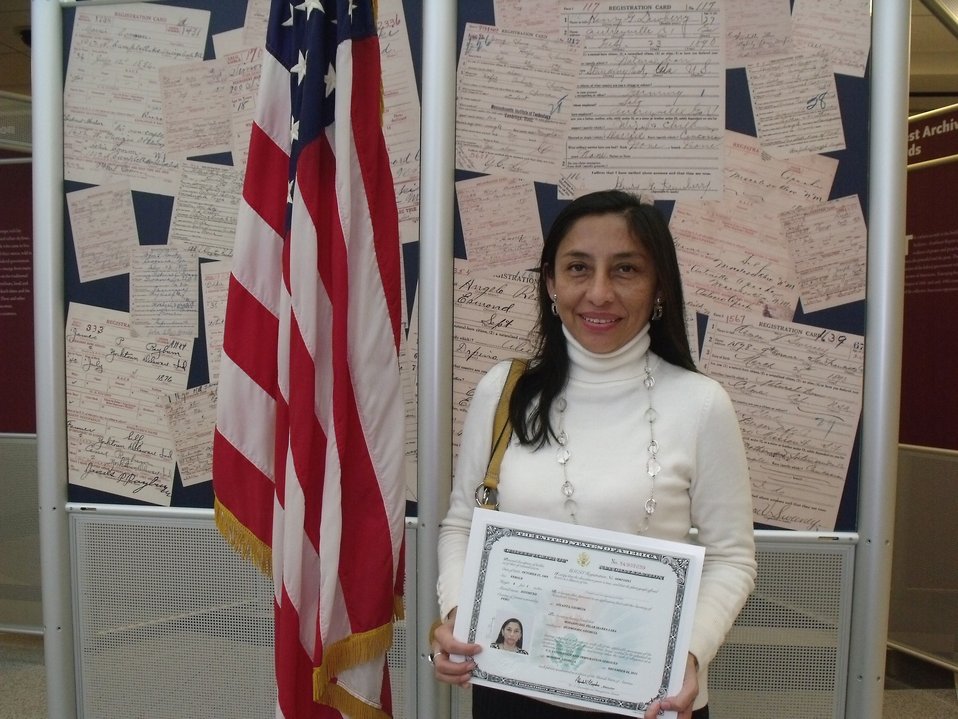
New Citizens